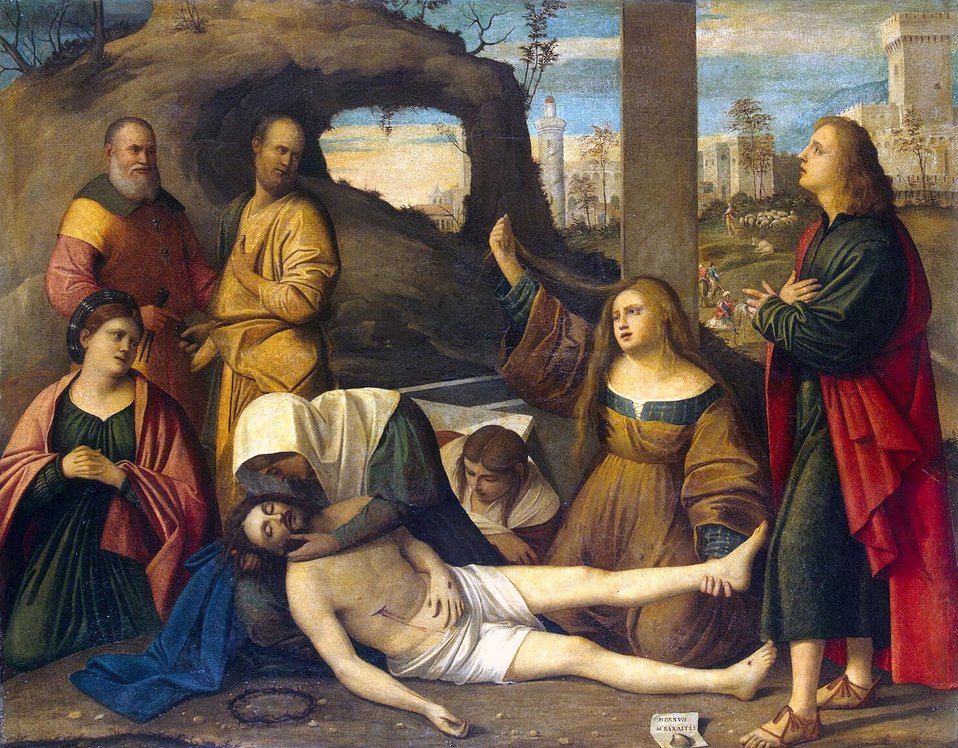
10 Marco Basaiti. Lamentation, 1527, State Hermitage Museum Sanct Petersburg, Russia